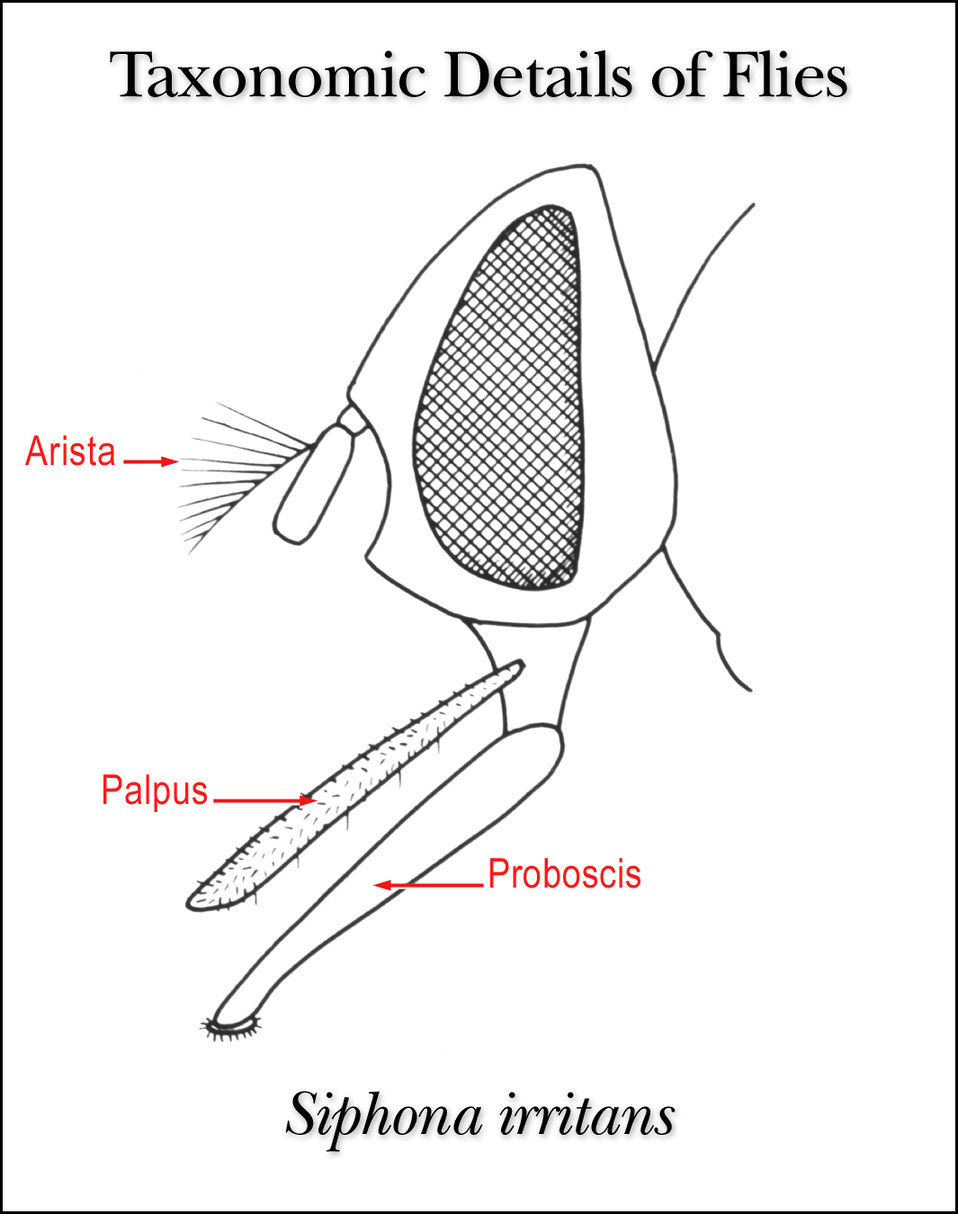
This illustration shows the taxonomic details in the head region of the fly Siphona irritans.